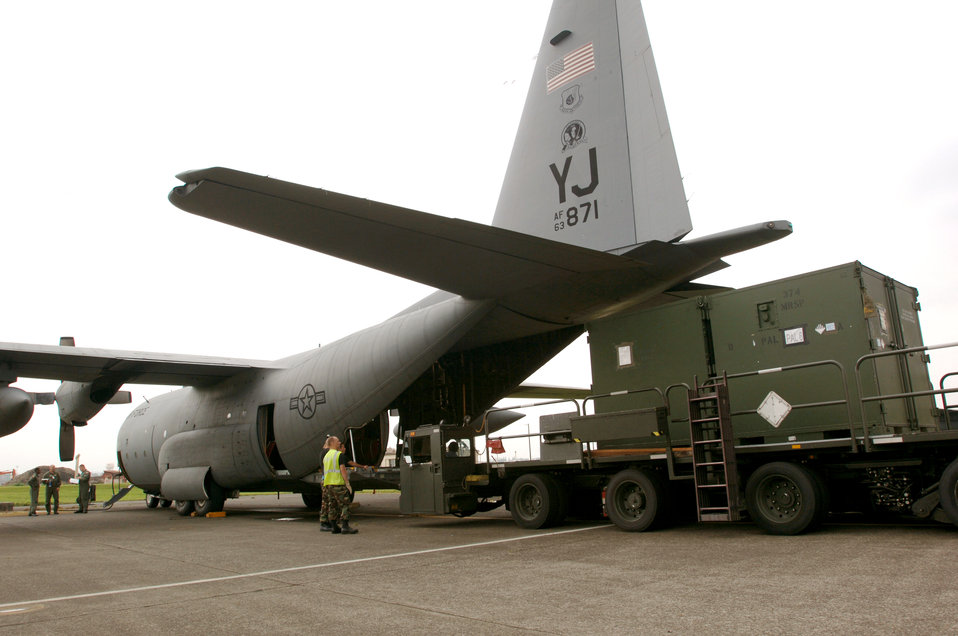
Movin' out

YOKOTA AIR BASE, Japan -- Airmen load a C-130 Hercules aircraft with equipment during an operational readiness exercise here. The aircraft is assigned to the 36th Airlift Squadron.